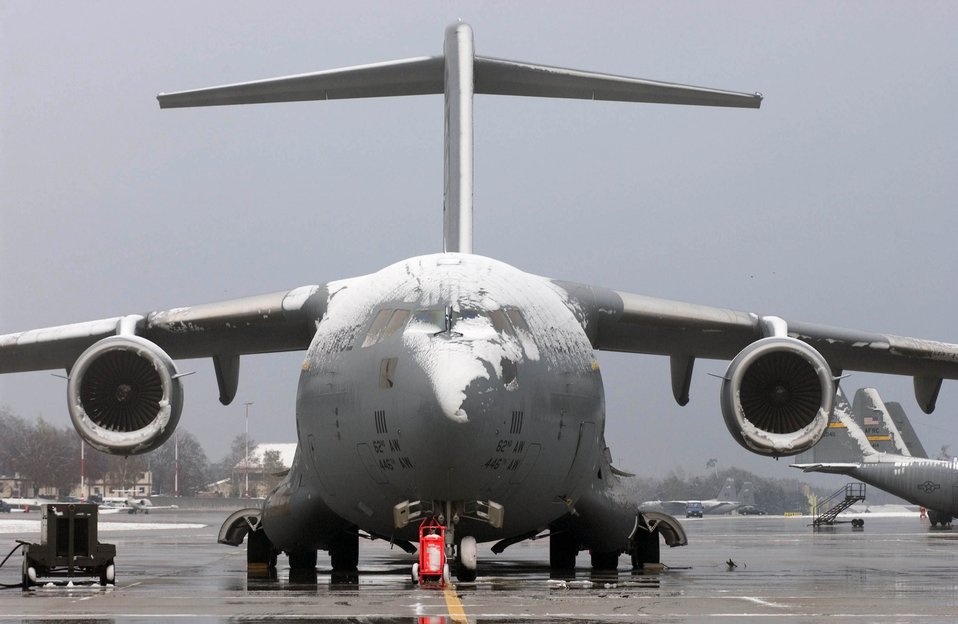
Morning snow

RAMSTEIN AIR BASE, Germany -- A C-17 Globemaster lll from McChord Air Force Base, Wa., is blanketed in snow after early morning flurries fell here Nov. 10. A little more than an inch of snow covered the area with some more flurries expected later.